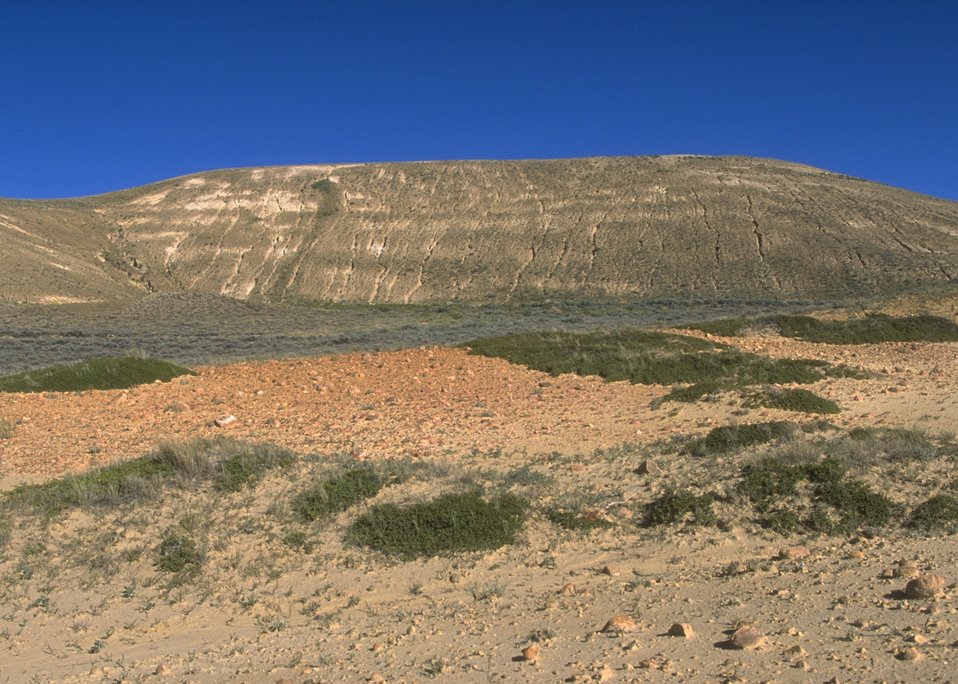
Gas Hill Abandoned Mine Lands in various stages of rehabilitation, Lander Field Office.